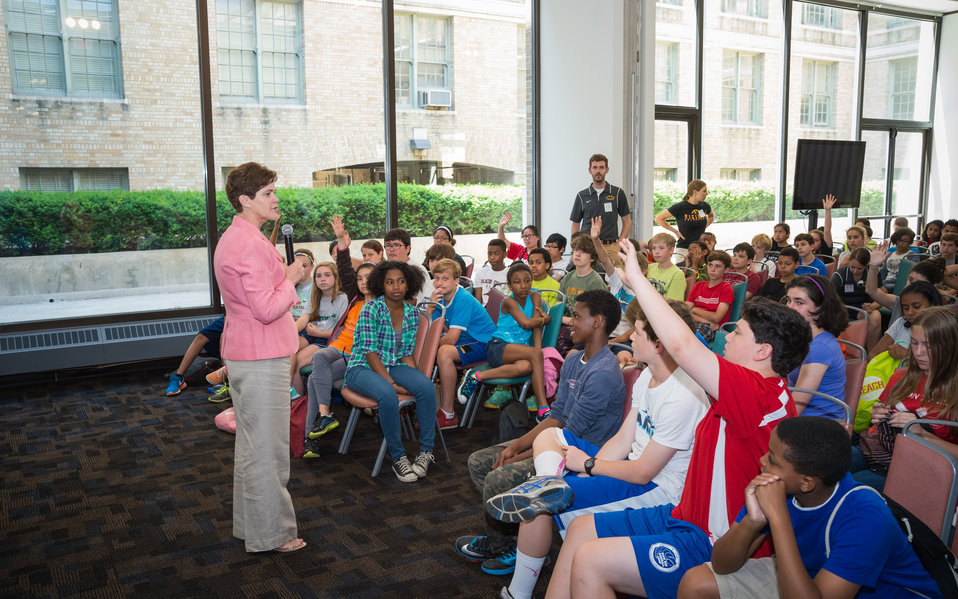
Agriculture Deputy Secretary Krysta Harden speaking with students from the Alice Deal Middle School, Washington, DC students during their visit to the United States Department of Agriculture (USDA) in Washington, DC, Wed. Jun. 4, 2014. The students studied hunger, food security, how to prevent hunger and organizations involved in solving hunger situations nationally and worldwide. A lot of what they learned is administered through the USDA.